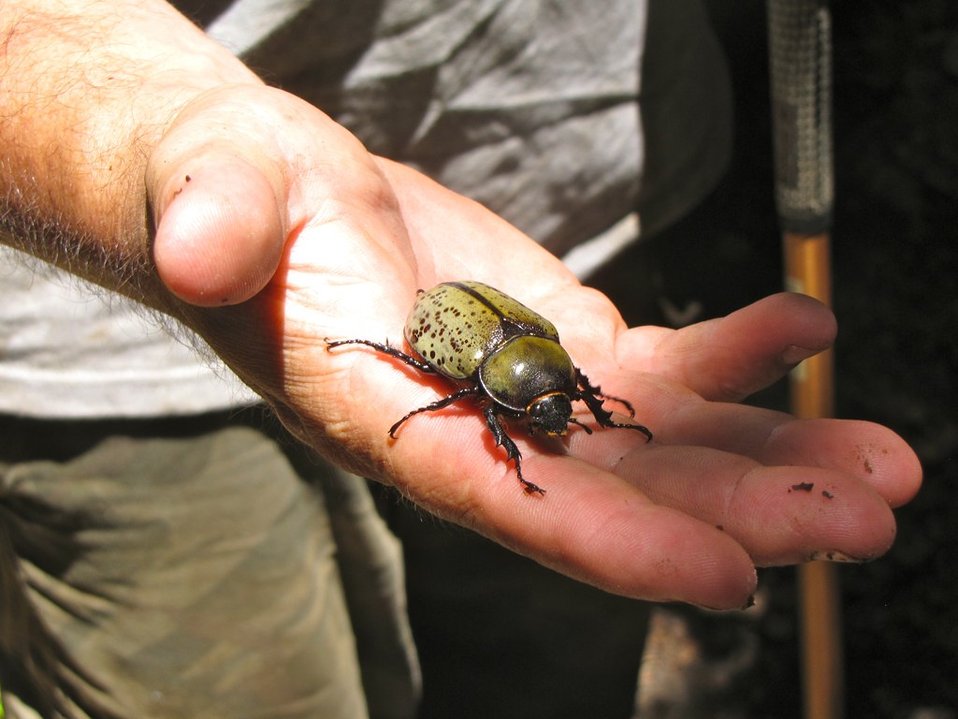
Mattaponi Wildlife Management Area, Virginia

Survey (June 27 - 28, 2012)

Female eastern hercules beetle (Dynastes tityus)